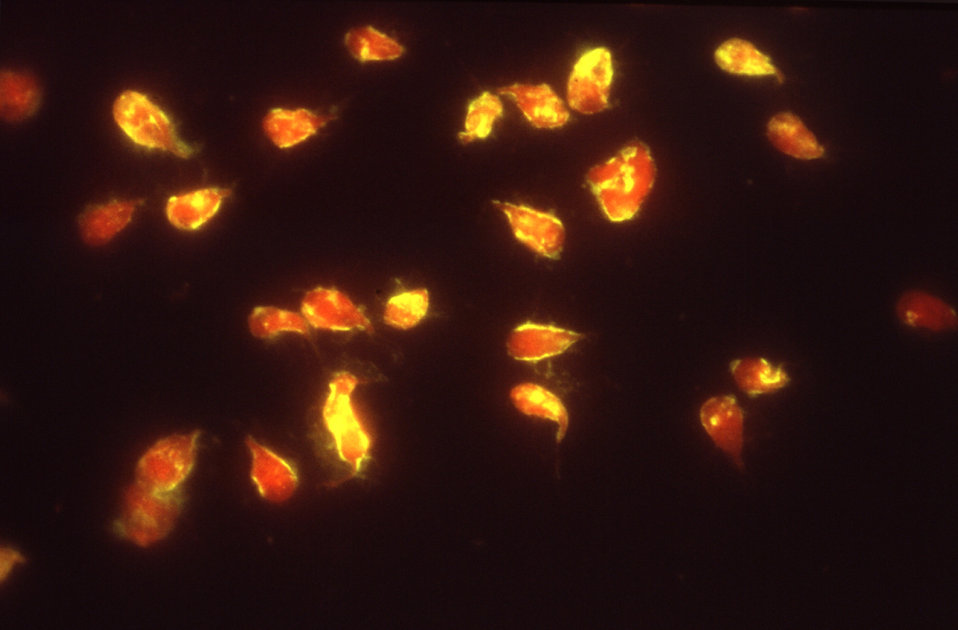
This photomicrograph depicts Giardia lamblia parasites using an indirect immunofluorescence test for giardiasis.